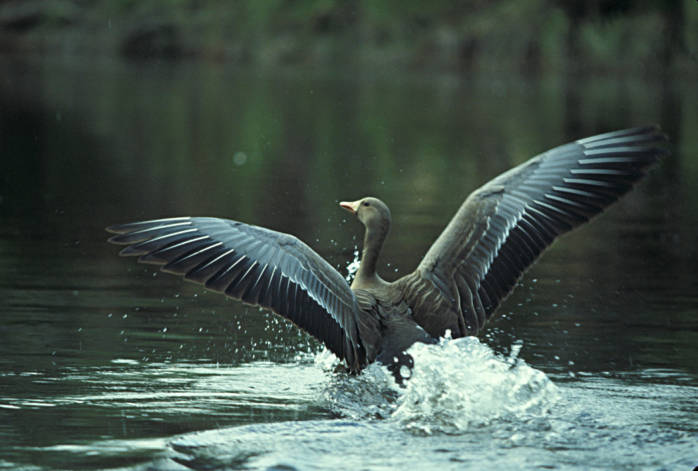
white-footed goose